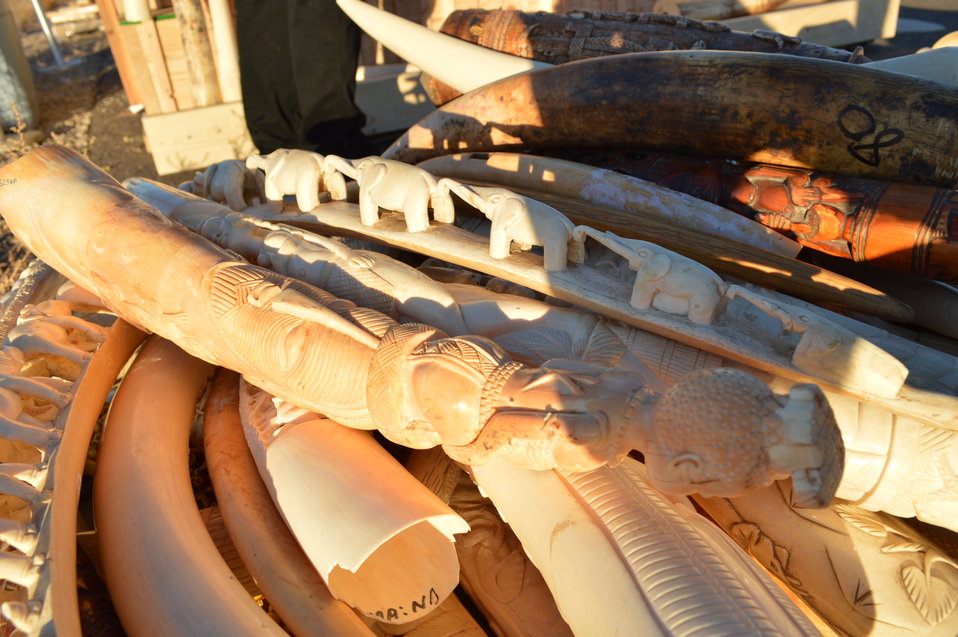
Ivory for crush in the morning light